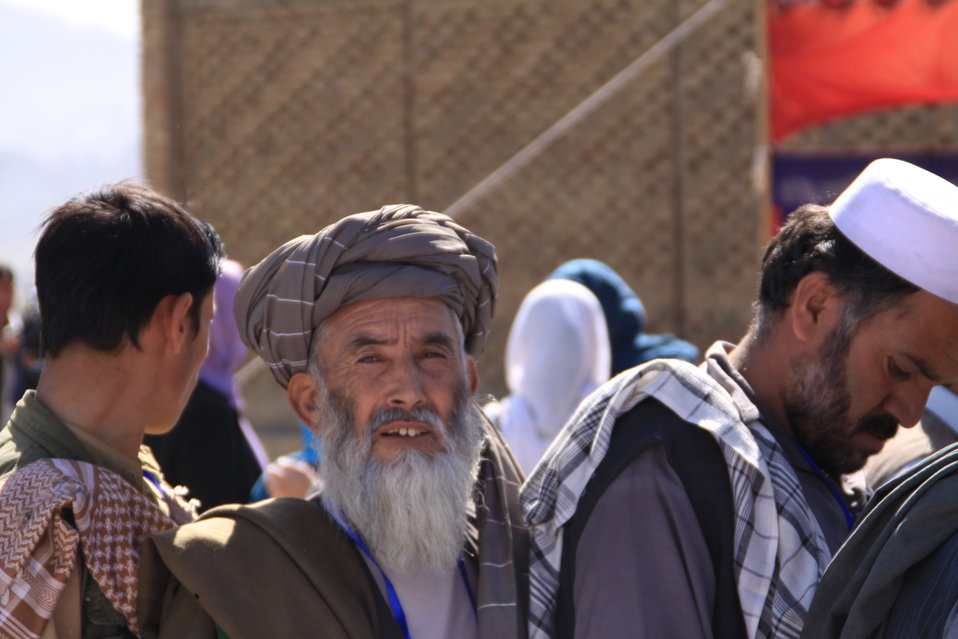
AVIPA Plus Wheat Seed Distribution 101005

US Ambassador Karl Eikenberry and USAID Acting Mission Director Kevin Brownawell joined the Minister of Agriculture, Irrigation and Livestock, H.E. Minister Mohammed Rahimi in signing a Memorandum of Understanding and distributing vouchers to area farmers for wheat and fertilizer.

US Ambassador Karl Eikenberry and USAID Acting Mission Director Kevin Brownawell joined the Minister of Agriculture, Irrigation and Livestock, H.E. Minister Mohammed Rahimi in signing a Memorandum of Understanding and distributing vouchers to area farmers for wheat and fertilizer.

US Ambassador Karl Eikenberry and USAID Acting Mission Director Kevin Brownawell joined the Minister of Agriculture, Irrigation and Livestock, H.E. Minister Mohammed Rahimi in signing a Memorandum of Understanding and distributing vouchers to area farmers for wheat and fertilizer.